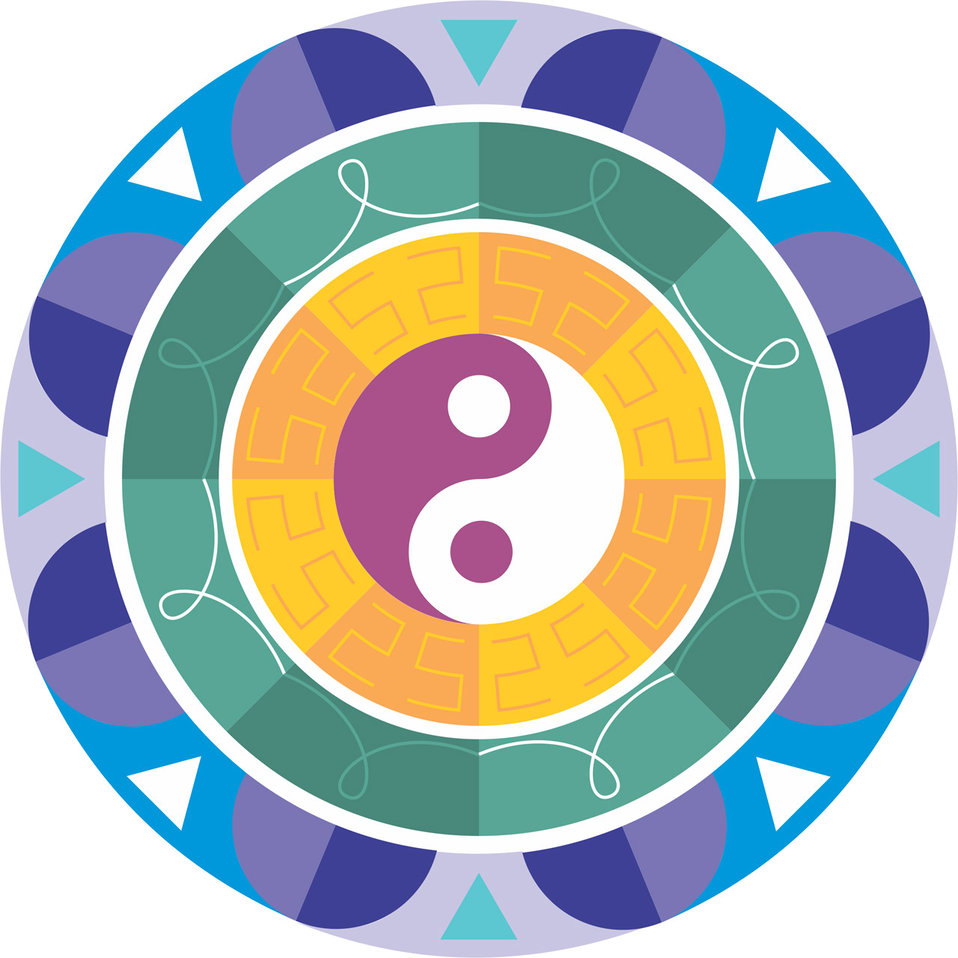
Mandala 2

A colorful mandala.